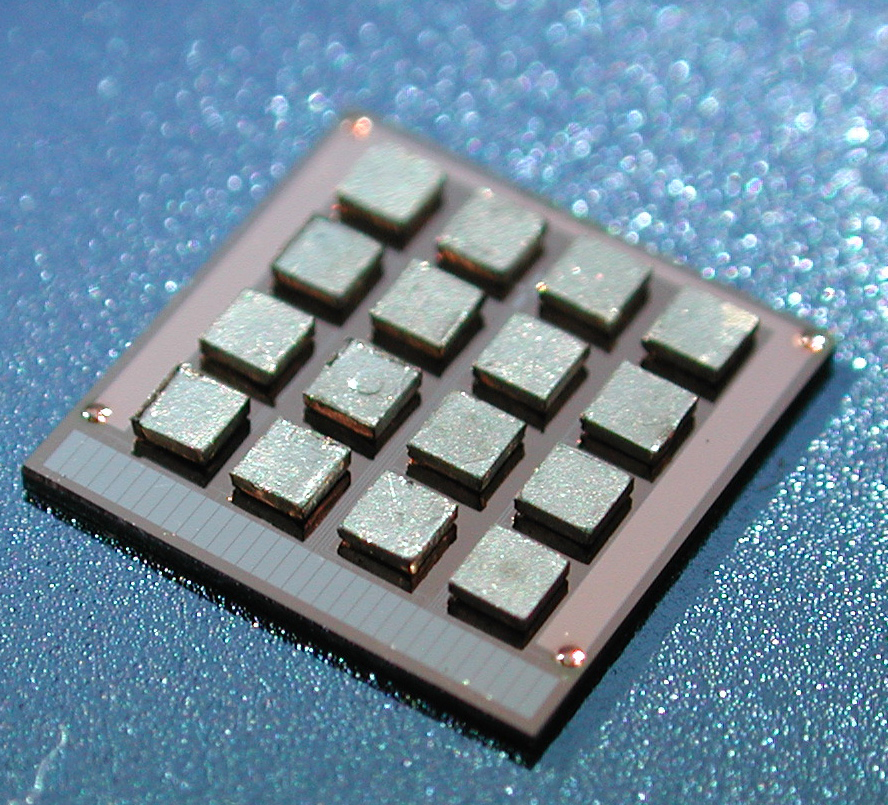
Gamma Ray Detector for Nuclear Inspections

Silicon chip built by NIST researchers with 16 tiny gamma ray detectors that may help nuclear inspectors improve analysis of plutonium and other radioactive materials. Each detector is one millimeter square.